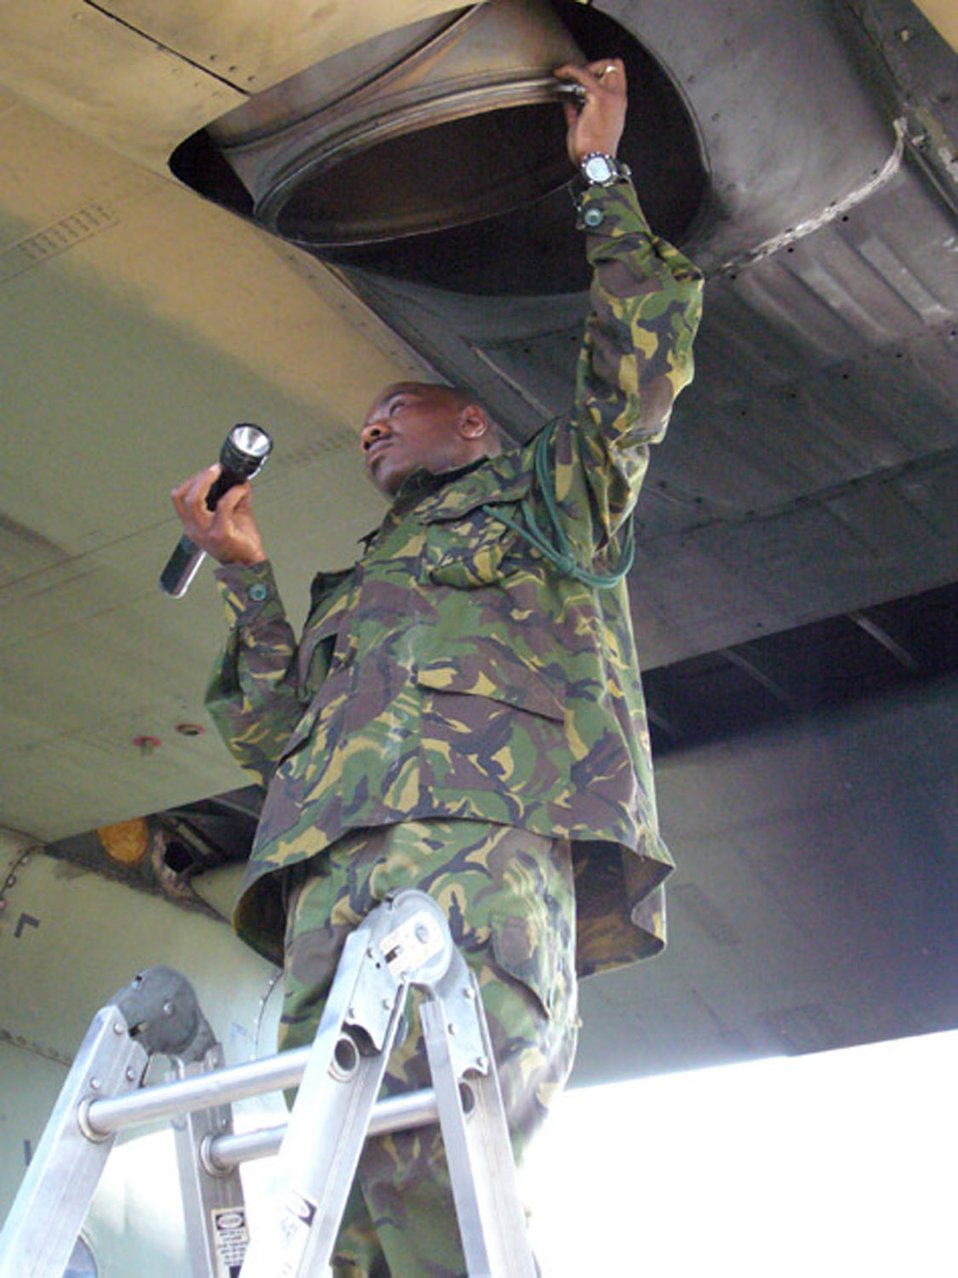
Ramstein flies with Botswana into Darfur

Botswana Defence Force Lance Cpl. Kobamelo Dabelo, C-130 technician, conducts a preflight inspection of the aircraft Sept. 24 at the Kigali International Airport in Rwanda.